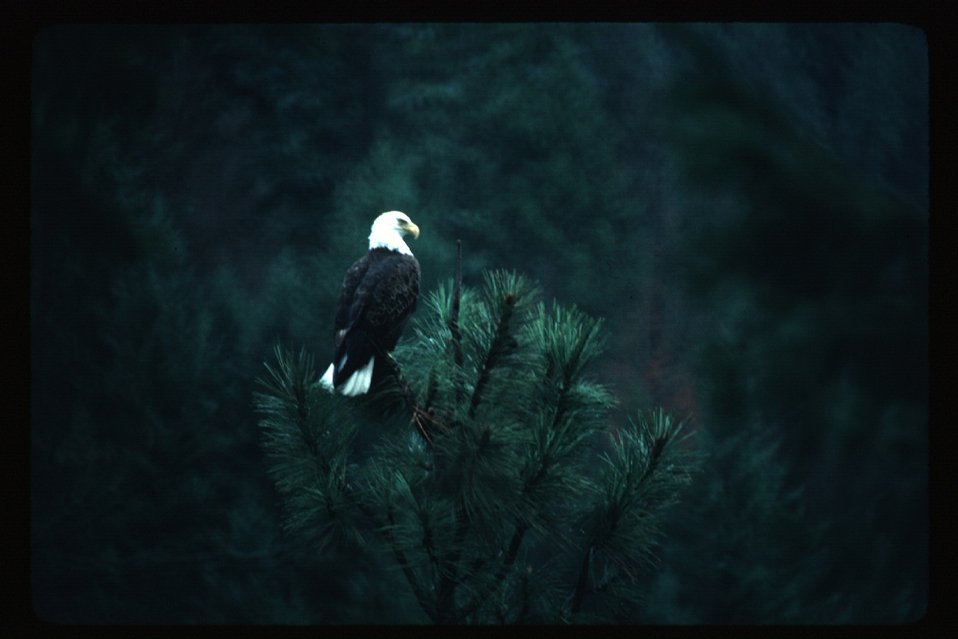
Bald Eagle Birds of Prey Scenic USRD Upper Snake River District